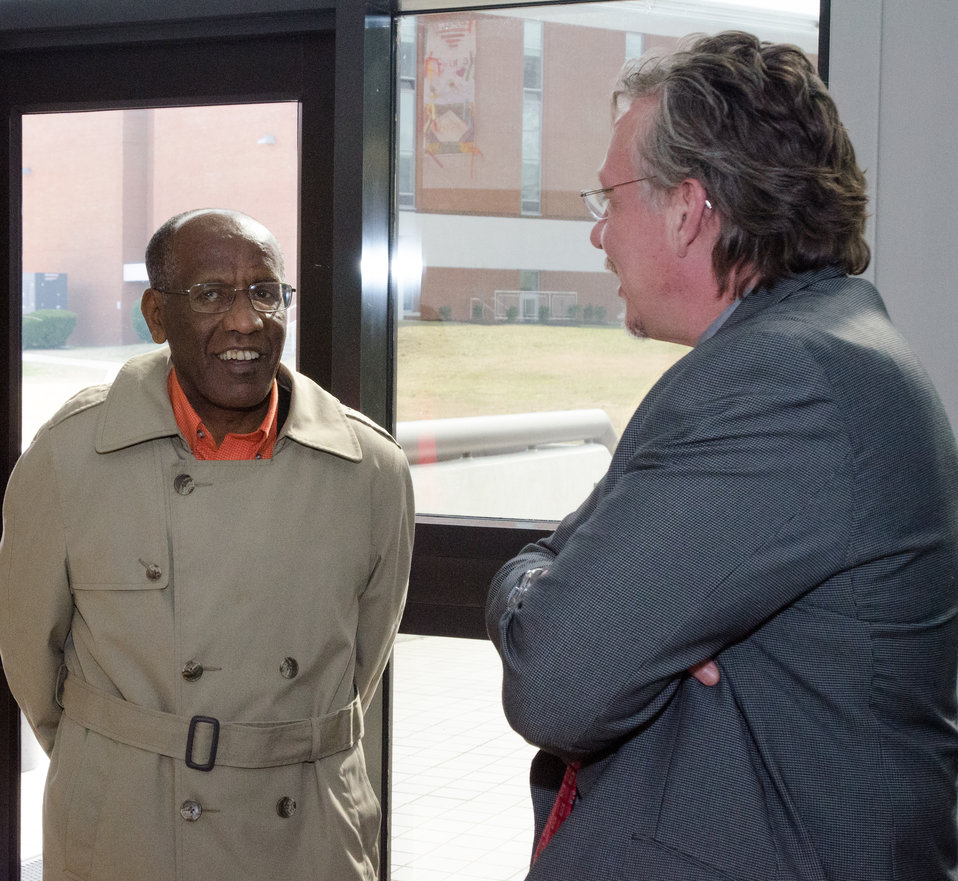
U.S. Department of Agriculture (USDA) Animal and Plant Health Inspection Service Wildlife Services Area Veterinarian-In-Charge Dr. Mark A. Remick, right, and Virginia State University (VSU) Agricultural Research Station Associate Dean and Director of Research Dr. Wondi Mersie, left, during in the “VSU, USDA and Virginia Farmers Working Together” outreach workshop in the VSU, L. Douglas Wilder building on Thursday, March 7, 2013, in Petersburg, VA. Farmers shared and learned new ways to do more with USDA services, and how to apply for programs that will help grow their business.